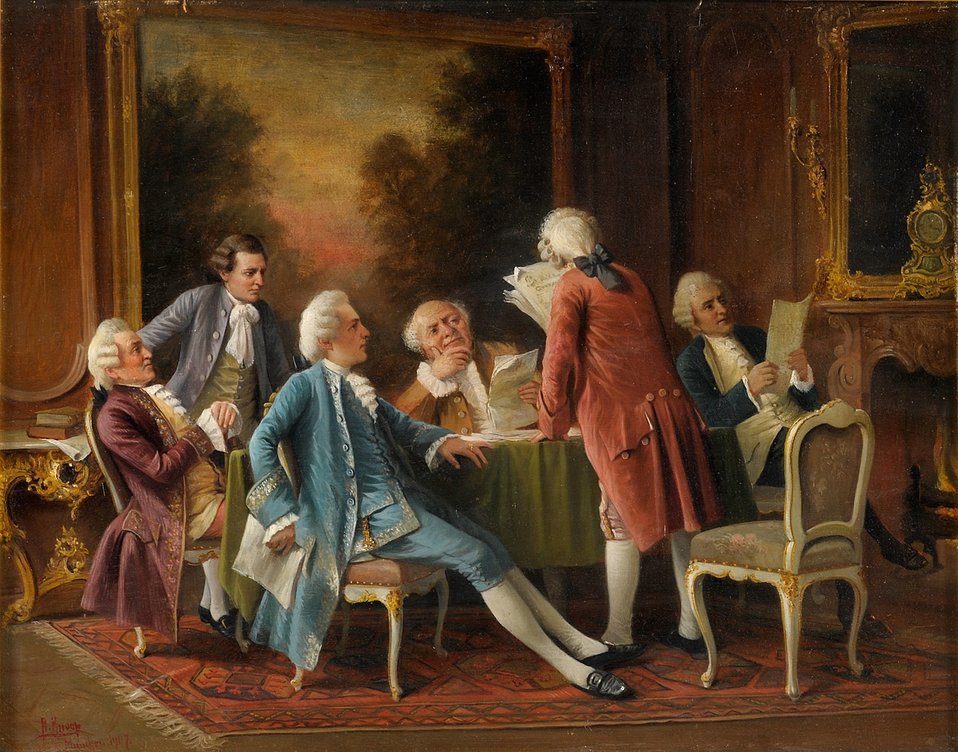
Die Depesche. Signiert. Datiert: München 1907. ÖL/Holz, 32 x 41 cm